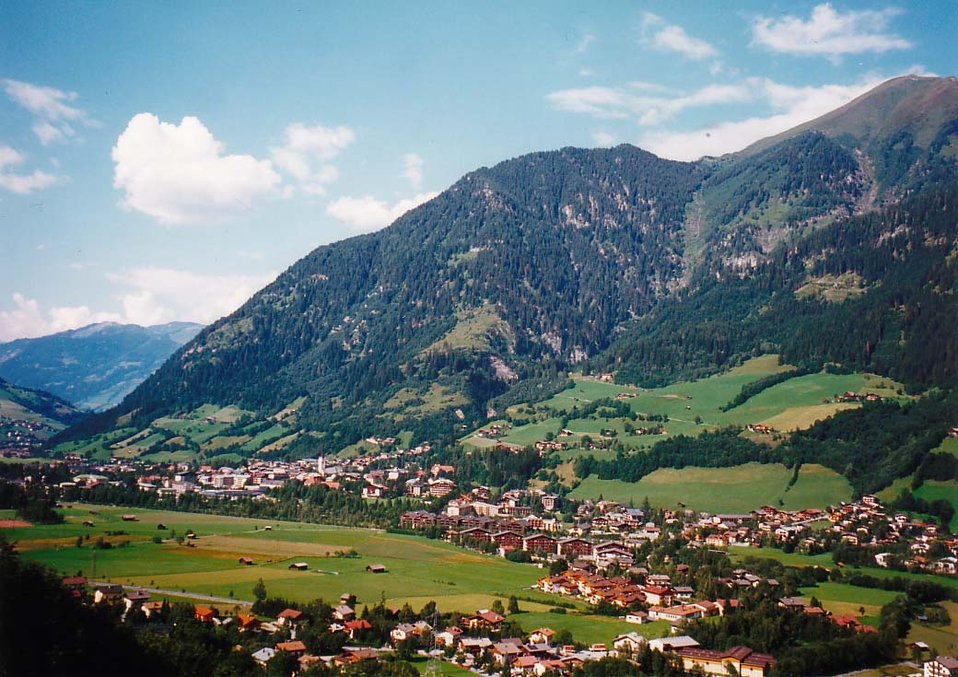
Deutsch: Bad Hofgastein